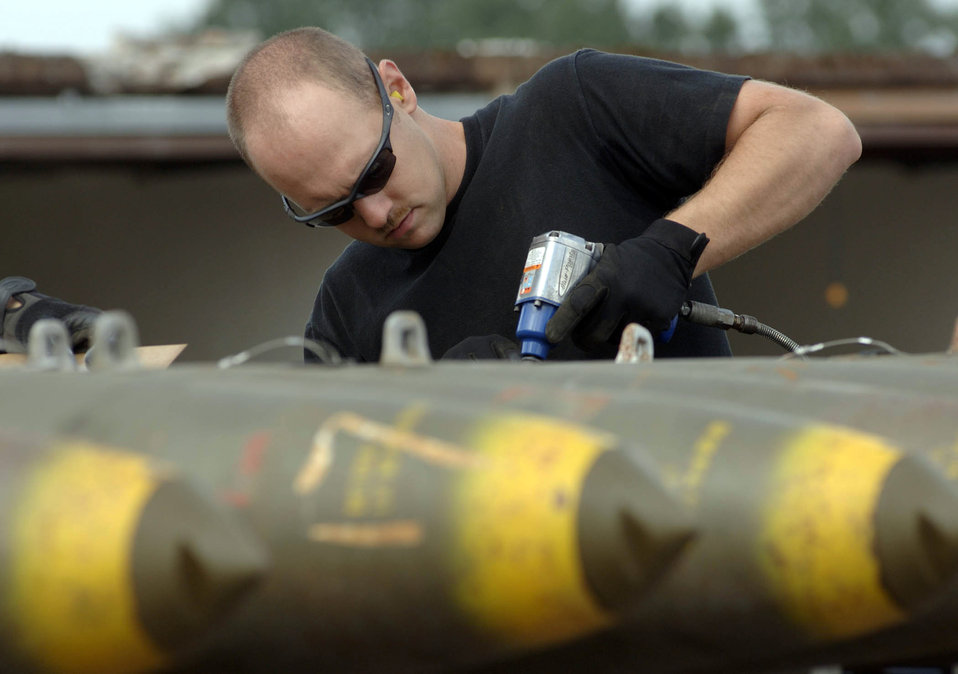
Fins

SPANGDAHLEM AIR BASE, Germany -- Senior Airman Mike Miller secures mark-82 bomb fins for a future live fire exercise here. Airman Miller is a munitions crewmember with the 52nd Equipment Maintenance Squadron.